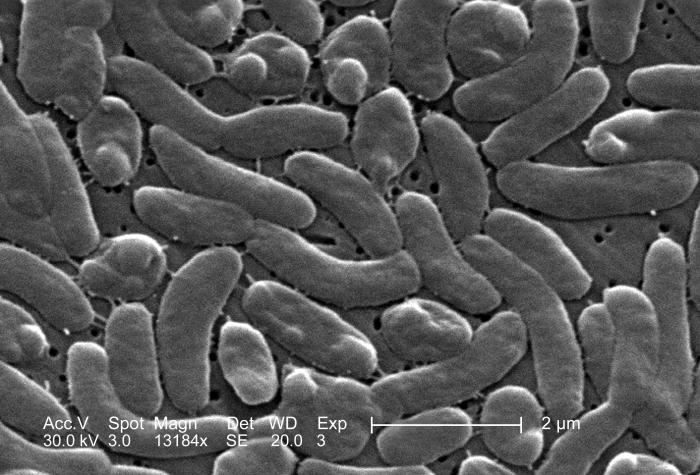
This scanning electron micrograph (SEM) depicts a grouping of Vibrio vulnificus bacteria; Mag. 13184x.